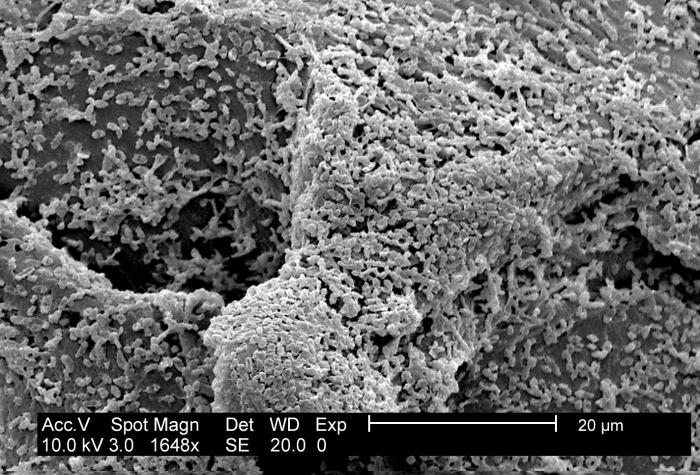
This SEM depicts a P. mirabilis (ATCC 29906) biofilm growing on PC (polycarbonate) coupons using a CDC biofilm reactor.